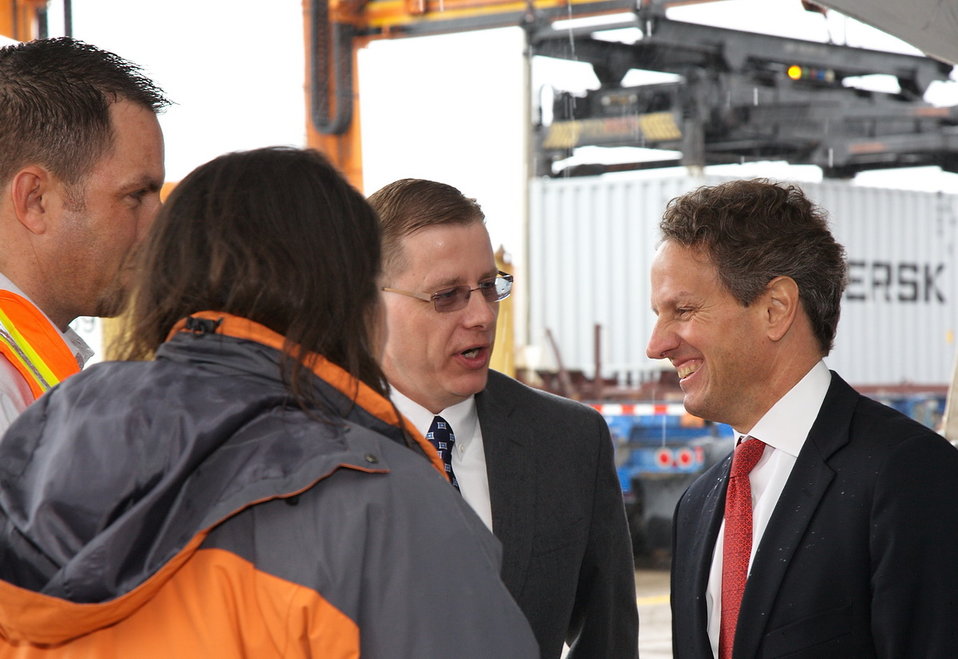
Secretary Geithner Visits BNSF Railway Dallas-Fort Worth, TX

During his tour, Treasury Secretary Tim Geithner met with workers at BNSF's Alliance Intermodal Facility in North Fort Worth, TX.